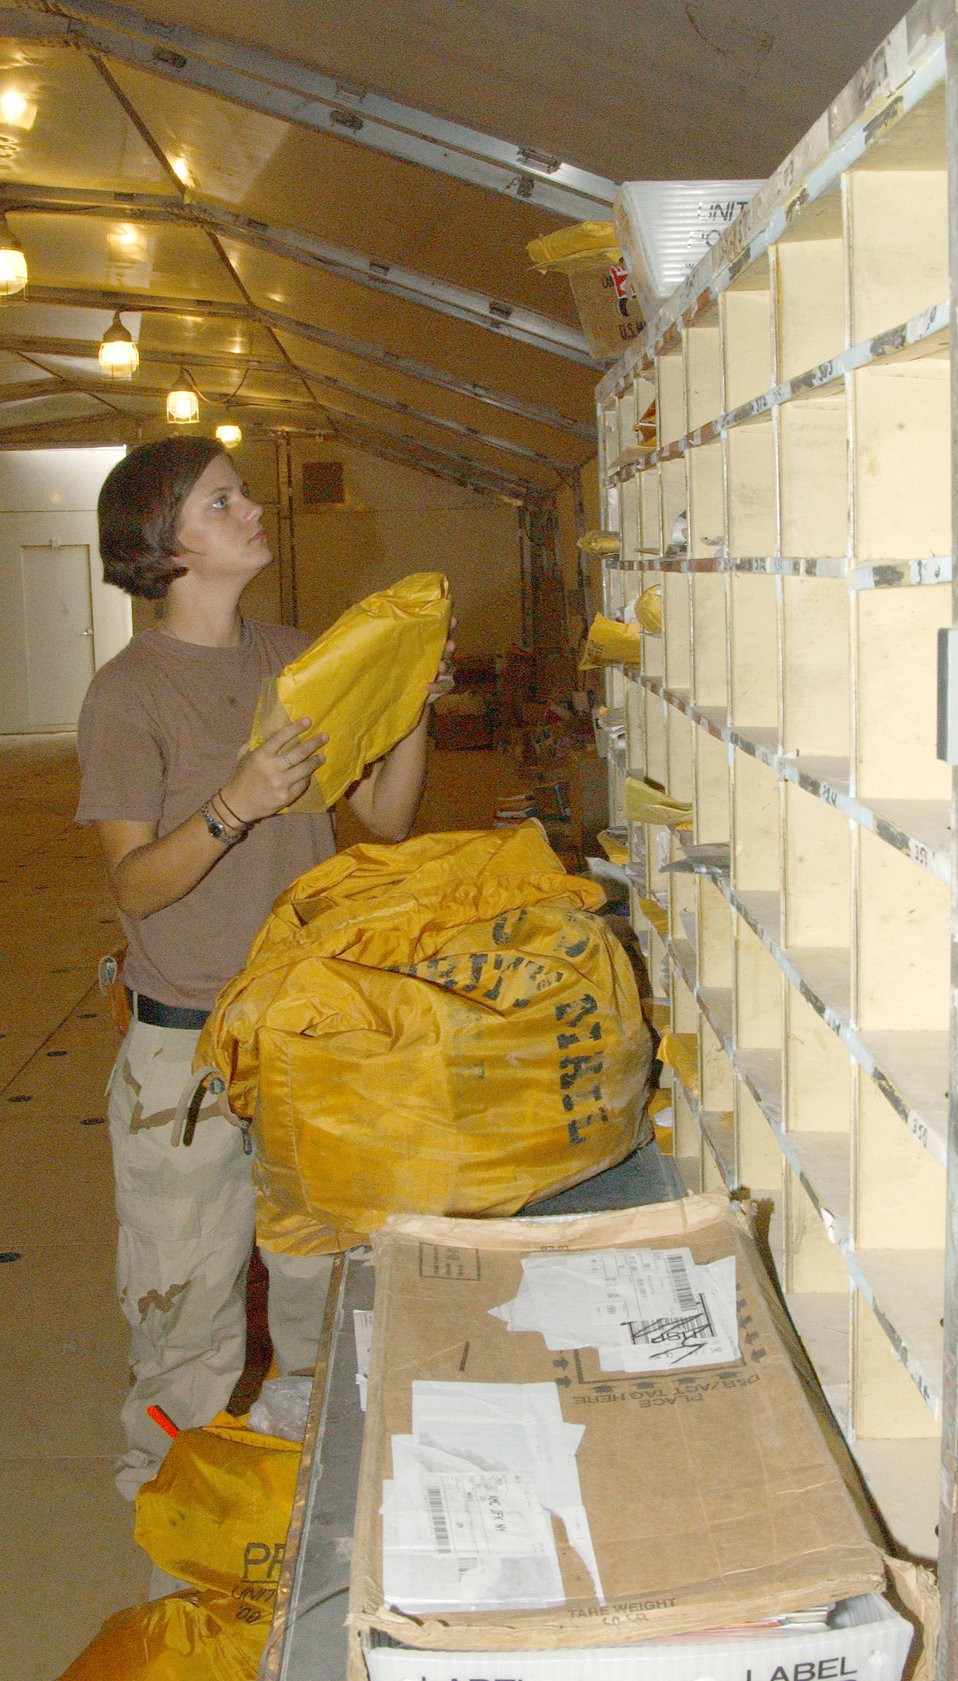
Deployed postal workers help build morale

BALAD AIR BASE, Iraq -- Airman 1st Class Kristi Knudson divides mail at the postal facility. She is one of three full-time postal employees here. Airman Knudson is a postal augmentee with the 332nd Expeditionary Communications Squadron and is from Eglin Air Force Base, Fla.